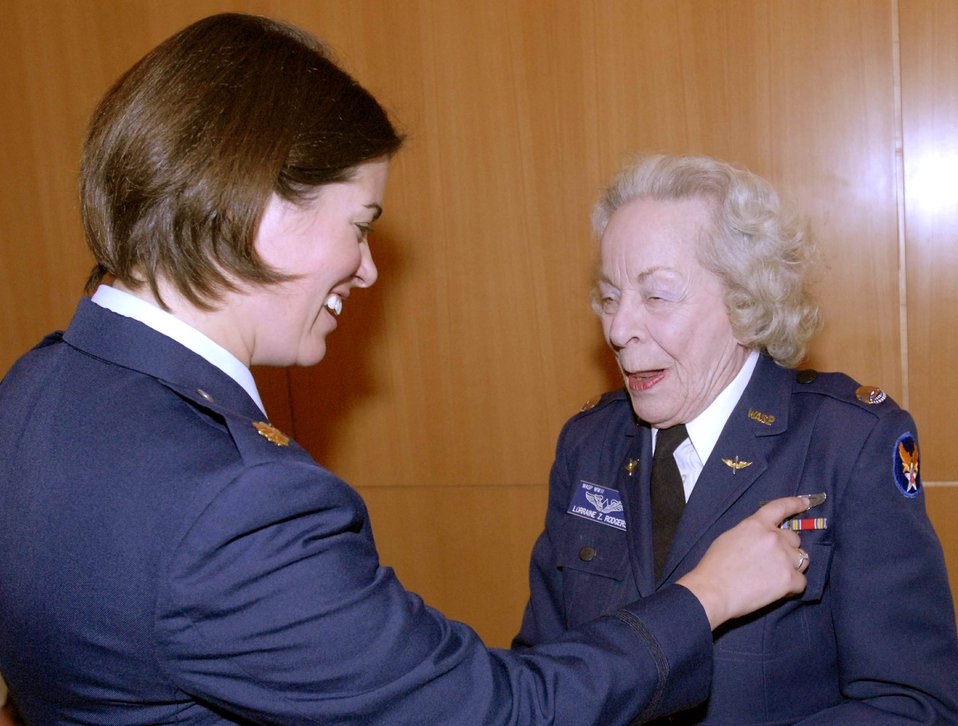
AcademyWomen hold leadership symposium

Maj. Nicole Malachowski asks Lorraine Rodgers about her flight wings during a break at the 5th Annual AcademyWomen Leadership Symposium Oct. 19 in Arlington, Va. Mrs. Rodgers is a World War II Women Airforce Service Pilots and received her wings from Gen. Hap Arnold. More than 200 past, present and future military officers attended the three-day conference at the Women in Military Service for America Memorial at Arlington Cemetery.